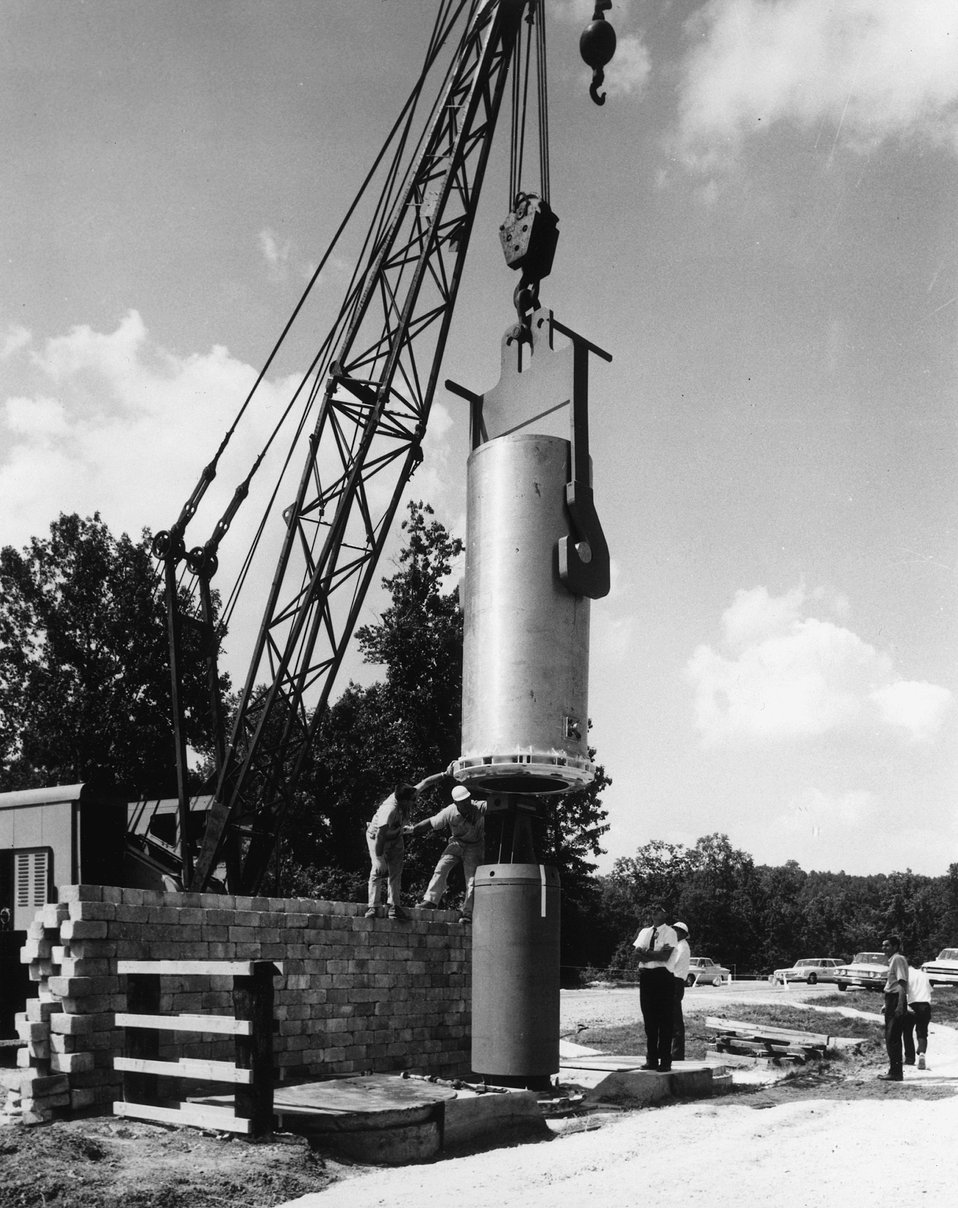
Workmen at the Energy Research and Development Administration's Oak Ridge National Laboratory position a lead container for loading radioactive waste material. c. 1976